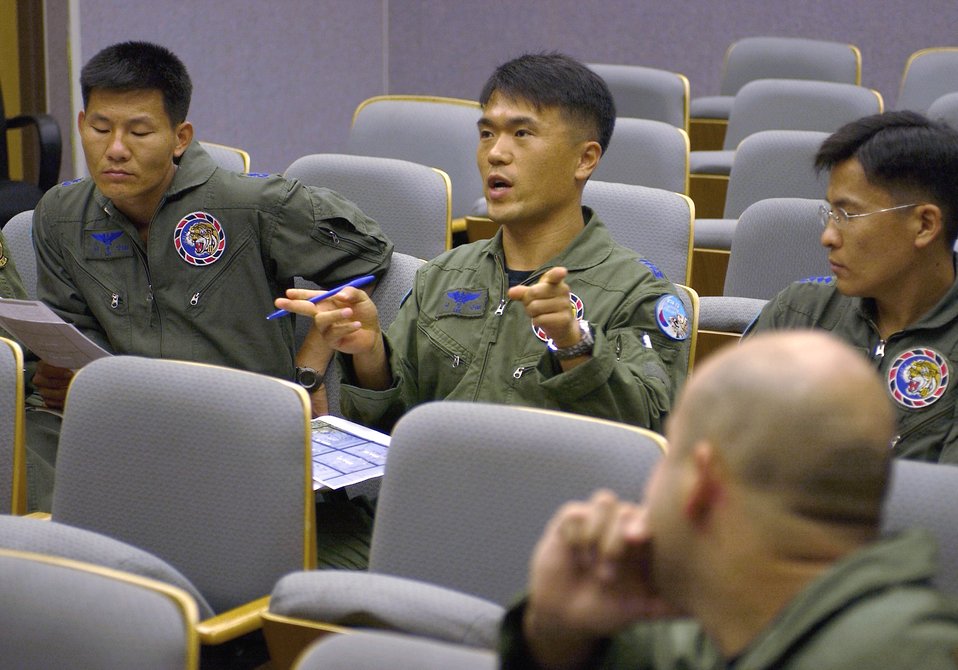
Kunsan, South Korea team up for joint training exercise

Capt. Jueng Geun Lee participates in a joint training excercise with members of the 8th Fighter Wing here June 8 at Kunsan Air Base, South Korea. This is the first time since the South Korean 111th Fighter Squadron moved to Kunsan AB that the South Korean and American units have briefed, flown and debriefed together on a dedicated mission. Captain Lee is a South Korean air force 111th Fighter Squadron pilot.